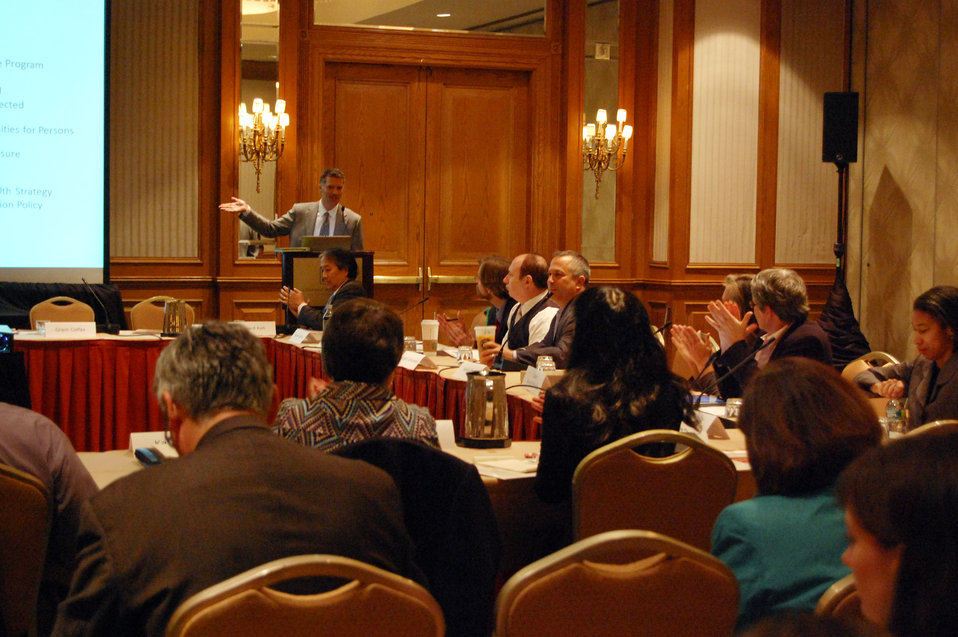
PACHA conf044